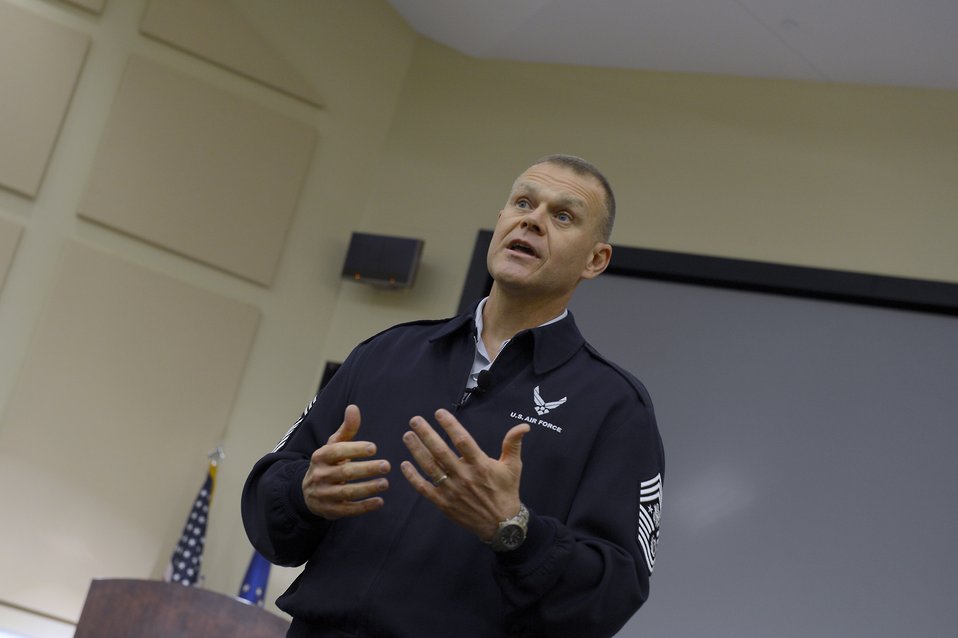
Caring for People

Chief Master Sergeant of the Air Force James Roy speaks at the Caring for People Forum at Joint Base Andrews, Md., on Sept. 26, 2012. This is the fourth annual forum which provides strategies for commanders, leaders and care professionals to help Airmen and their families.